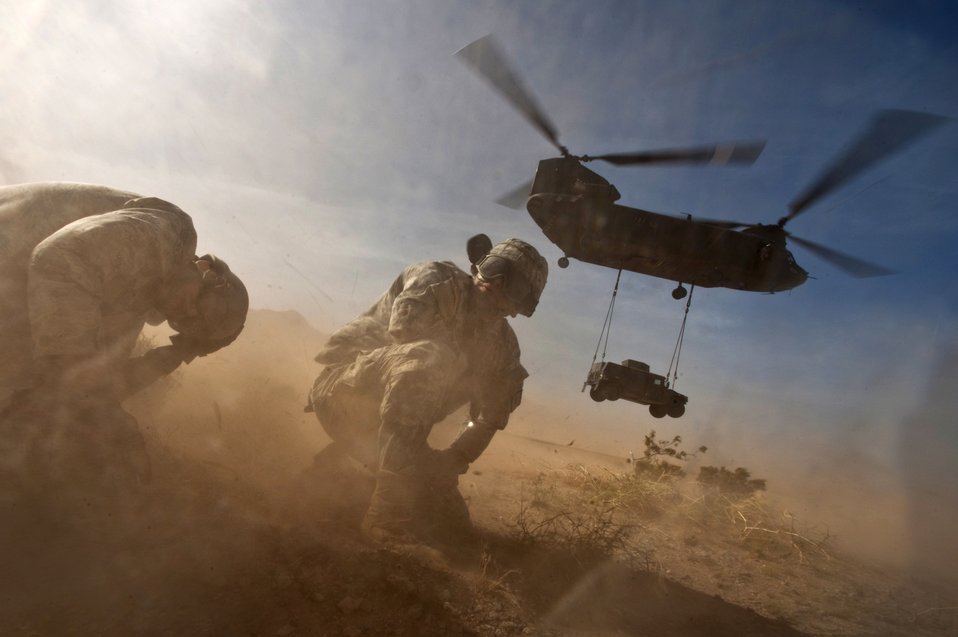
Left in the dust

Army Staff Sgt. Hector Hoyas and Senior Airman Matthew Phillips turn away as a CH-47 Chinook helicopter takes off with a HUMVEE sling-load April 15, 2011, during training at Nellis Air Force Base, Nev. Sergeant Hoyas is assigned to Fort Lee, Va. Airman Phillips is assigned to the 820th RED HORSE squadron.